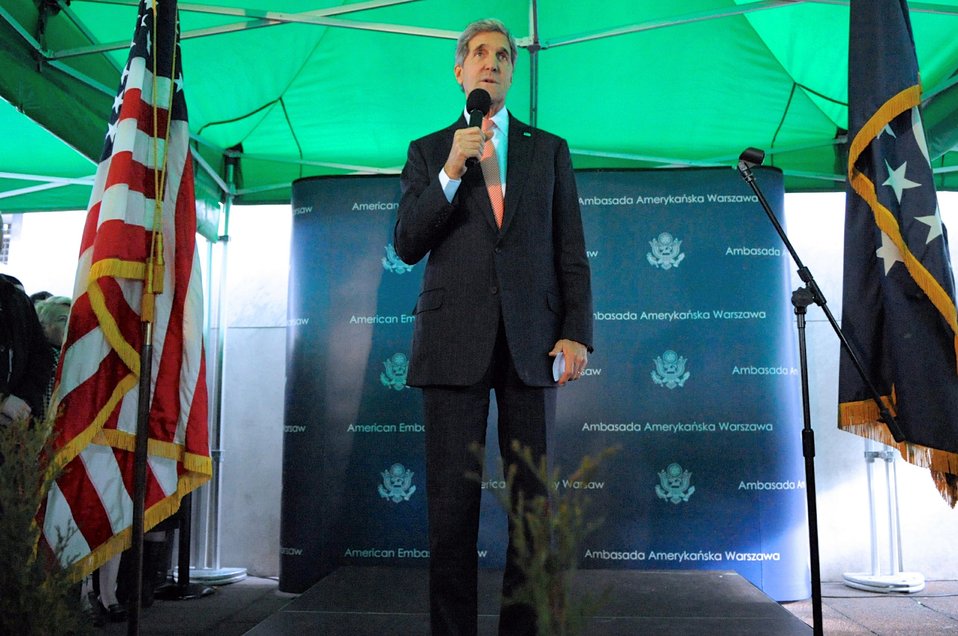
Secretary Kerry Addresses Embassy Warsaw Staff and Families

U.S. Secretary of State John Kerry addresses the staff and families of the U.S. Embassy in Warsaw, Poland, on November 5, 2013.